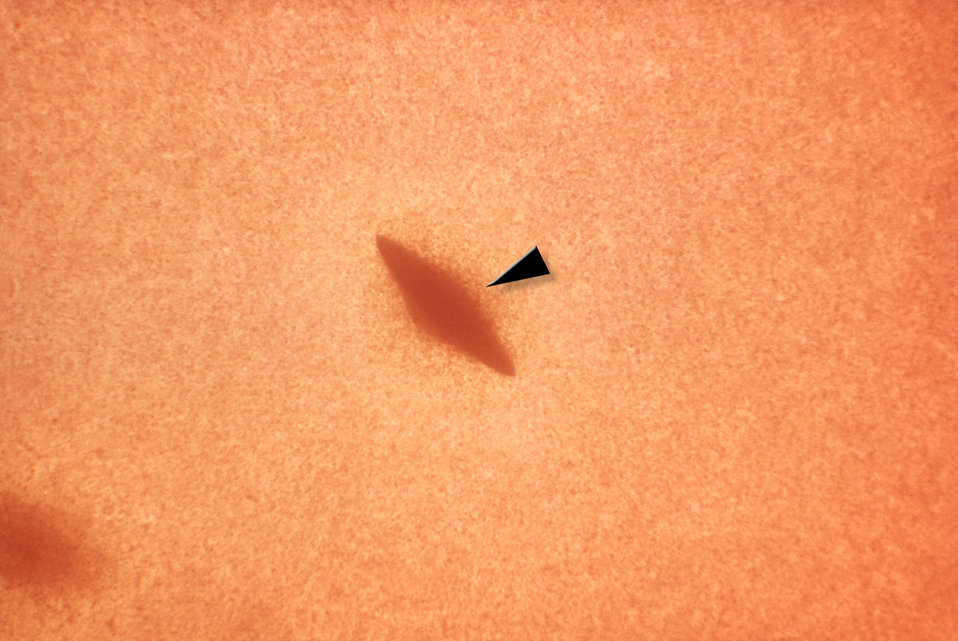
Magnified 100x, this image depicted a Petri dish filled with trypticase soy agar medium containing 5% defibrinated sheep's blood, i.e., blood agar plate (BAP). After having been inoculated with alpha-hemolytic Streptococcus anginosus bacteria, i.e., members of the Gram-positive viridans group of streptococci (VGS), just before the blood was added to the agar, a loop of diluted culture was put into the melted agar (50oC). The melted agar with blood was allowed to solidify and then incubated at 35oC for 24 hours in a normal atmosphere. The culture grew subsurface bacterial colonies, one of which was seen here. Surrounded by a characteristic hazy, faded, and indistinct region (arrow) in which some of the red blood cells were destroyed in the agar medium, or "hemolyzed", indicating that these bacteria were indeed alpha-hemolytic in nature.